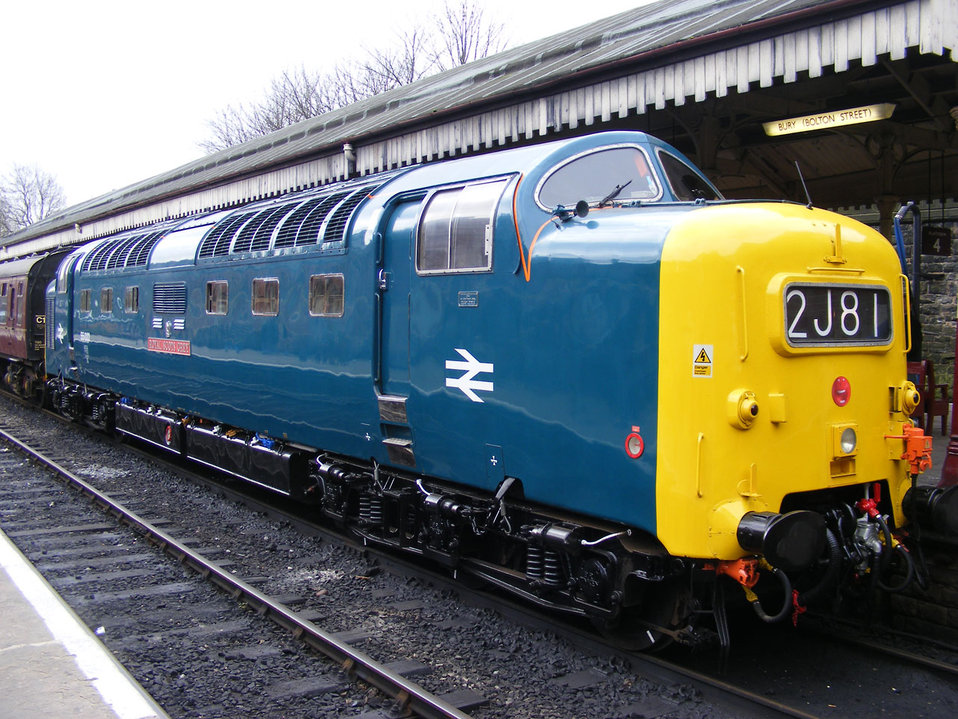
The royal scots grey

The mighty deltic 22, taken at east lancs railway 14 march 2009.